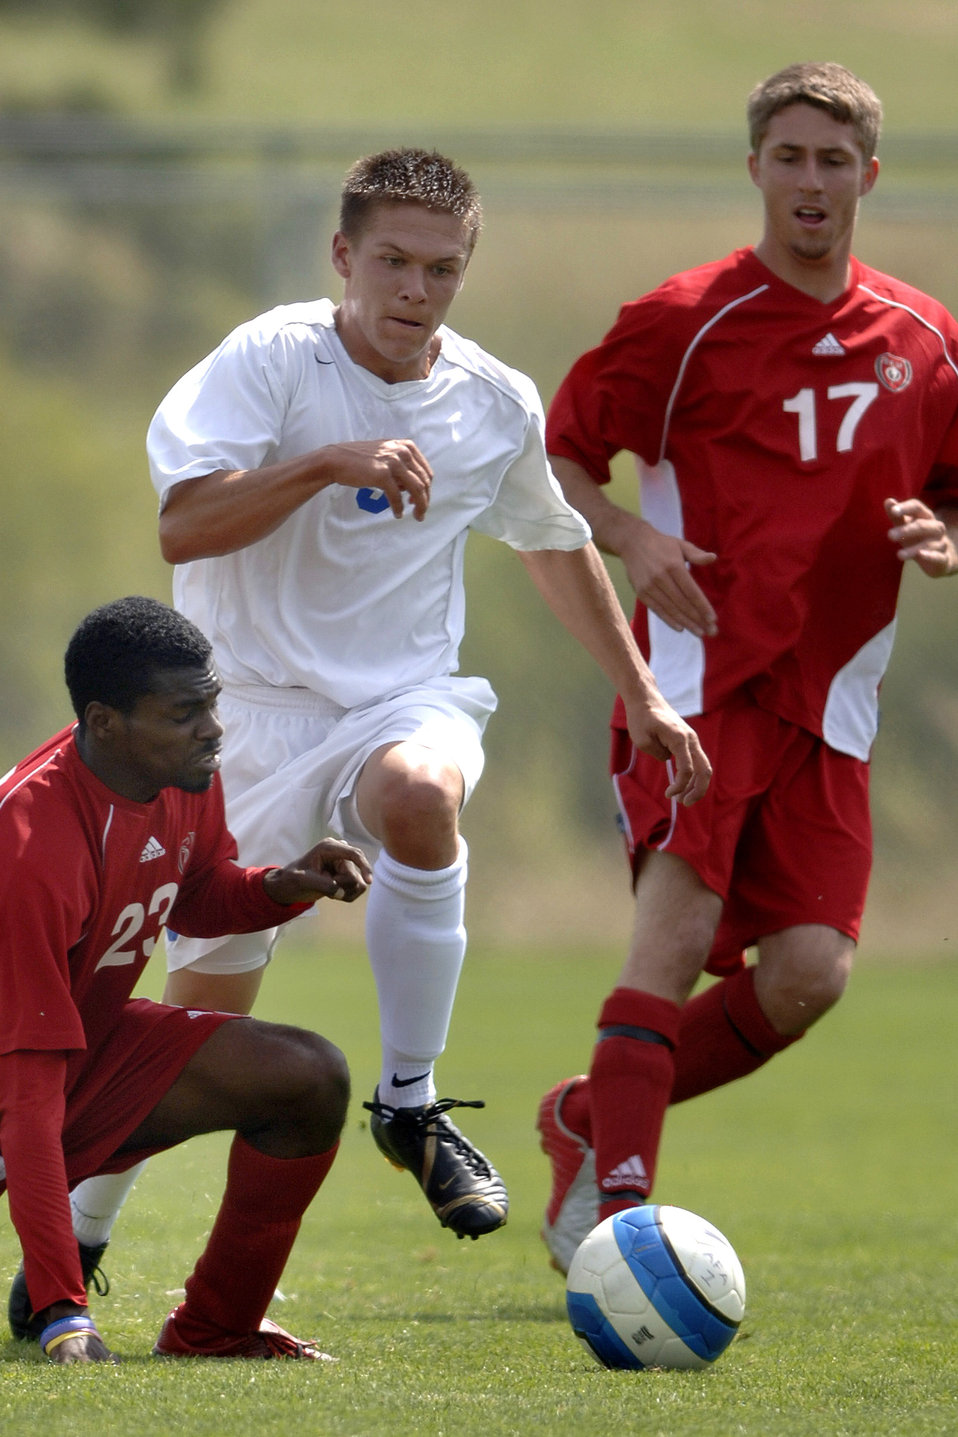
Falcons shut out St. Francis in soccer action

Freshman Kyle Schafer drives the ball through defenders as Air Force posts its second consecutive shutout with a 1-0 victory over St. Francis University in men's soccer action Sept. 9 at the U.S. Air Force Academy Cadet Soccer Stadium in Colorado Springs, Colo. With the victory, Air Force improved to 2-2 this season, while St. Francis fell to 1-3.